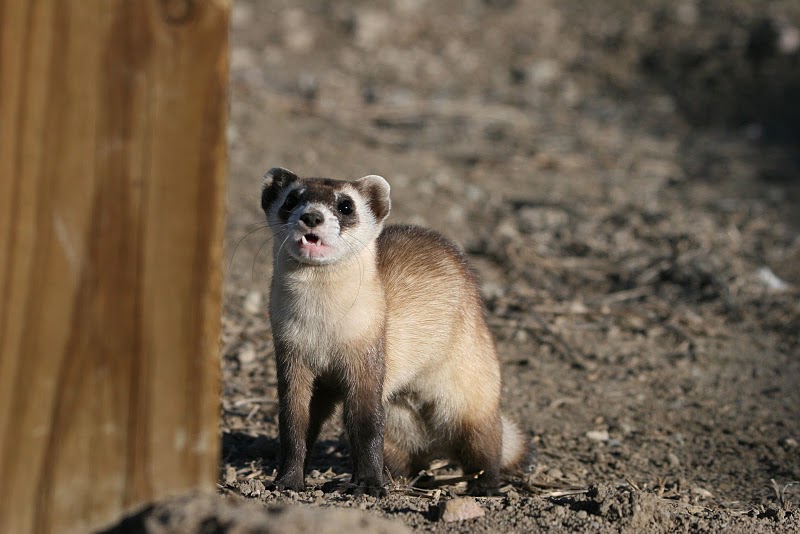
Black-footed Ferret